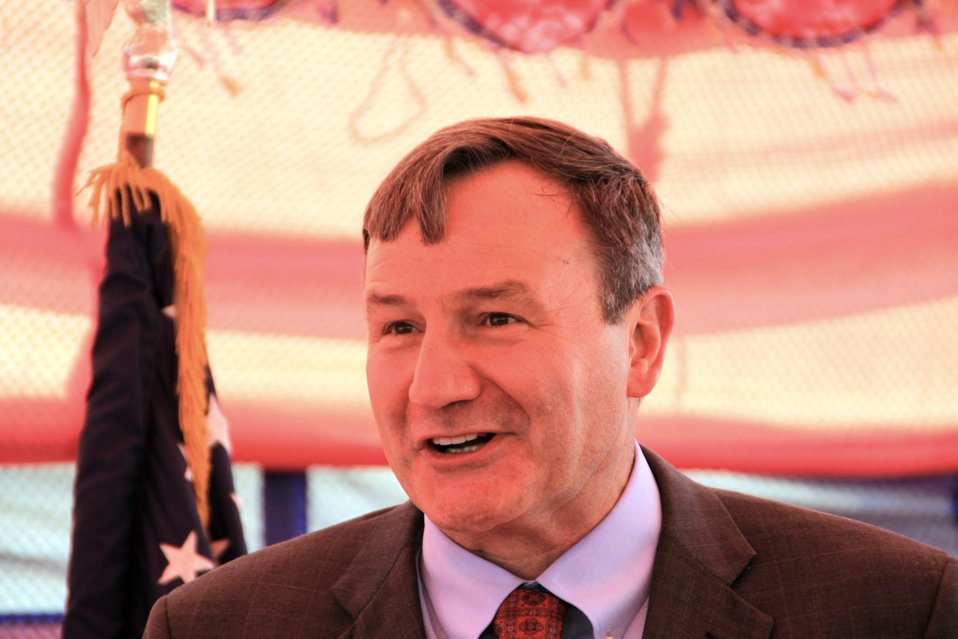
Badam Bagh Farm